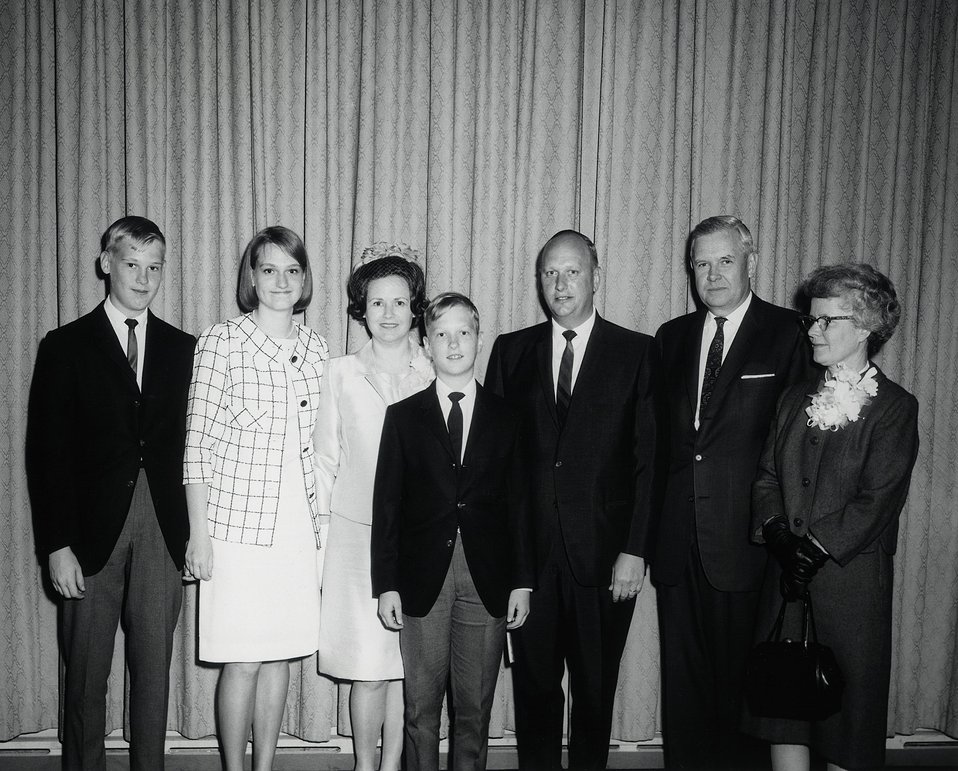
7th E.O. Lawrence Award Ceremony, April 27, 1966, Wash., D.C. Commissioner and Mrs. Tape, Mr. and Mrs. Vanstrum and children.